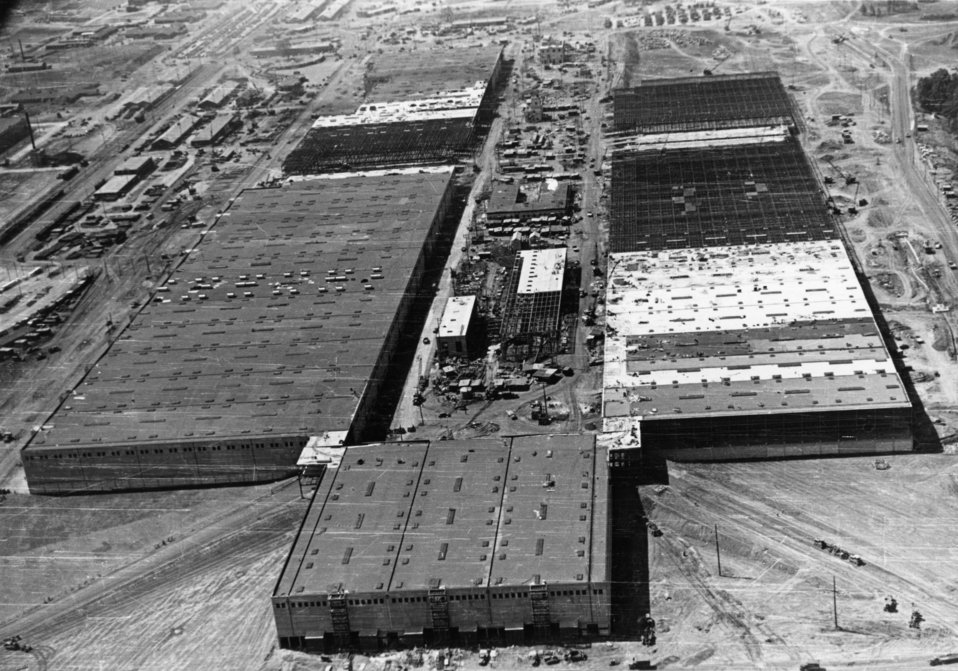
Aerial of Oak Ridge